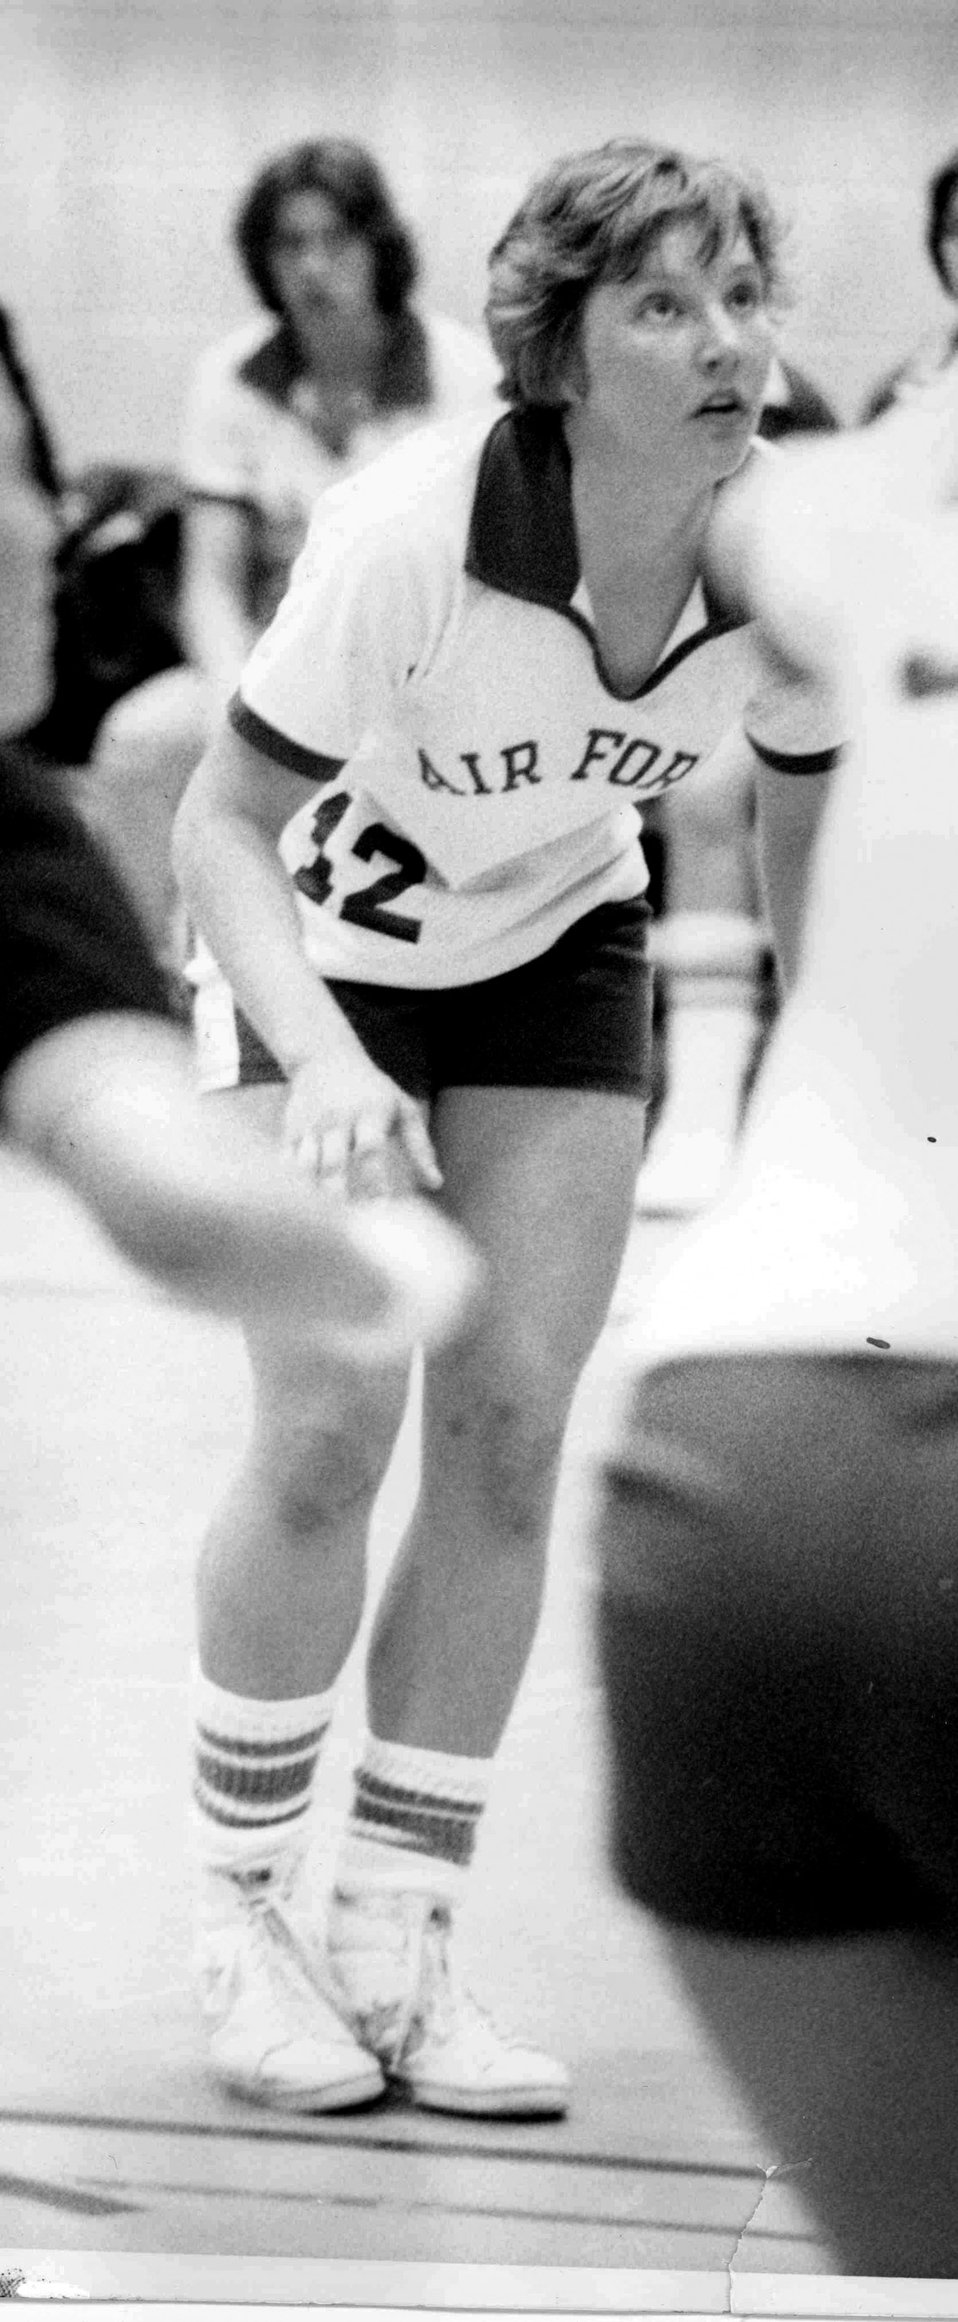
Academy announces inaugural class into athletic hall of fame

Brig. Gen. Michelle Johnson, a 1981 Air Force Academy graduate, is in the inaugural class being inducted into the Air Force Academy Athletic Hall of Fame. Presently the director of public affairs and deputy director of communication, office of the secretary of the Air Force, she is the most decorated female athlete in academy history.